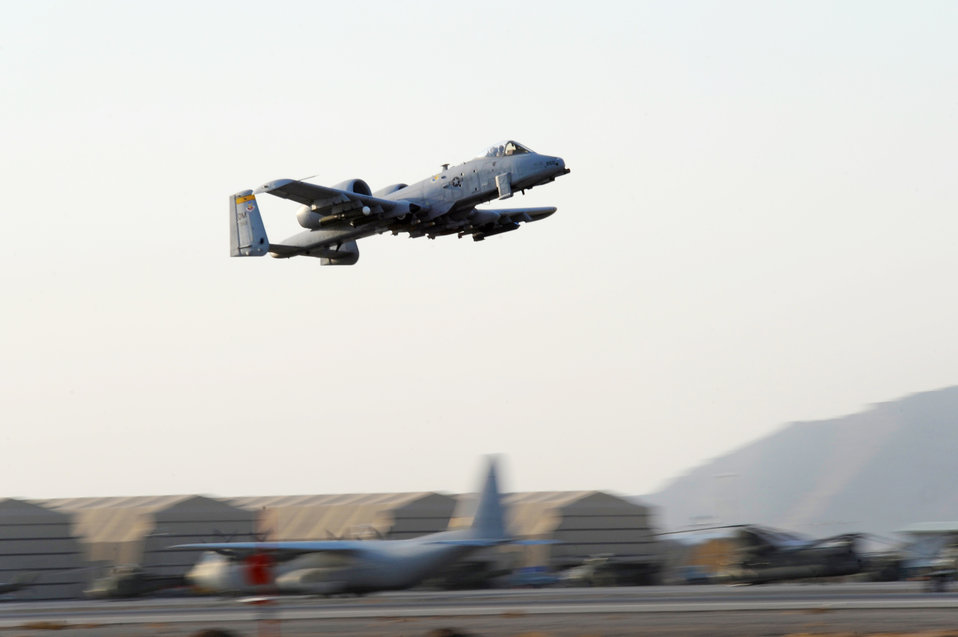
A-10 pilots prepare for mission

An A-10 Thunderbolt II with the 354th Expeditionary Fighter Squadron takes off at Kandahar Airfield, Afghanistan, Dec. 27, 2009. The A-10 is specifically designed to provide close-air support for U.S. and coalition ground forces.